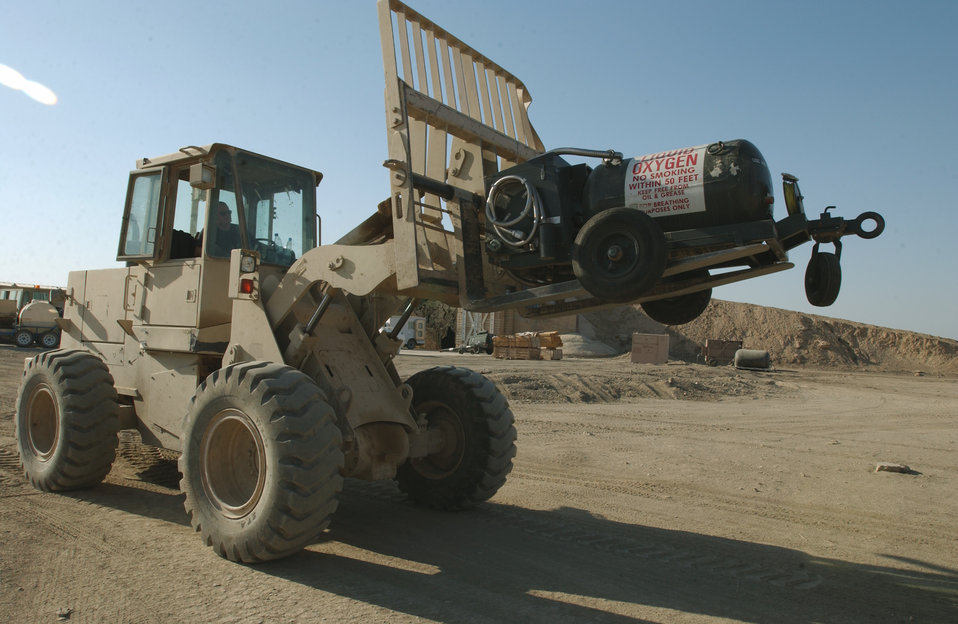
O2 Delivery

TALLIL AIR BASE, Iraq -- Senior Airman Timothy Vieira, 332d Expeditionary Logistics Readiness Squadron, employs a fork lift to unload an oxygen tank/trailer, at Tallil Air Base, Iraq, on Oct. 10, 2003, in support of Operation Iraqi Freedom. The Red Tail Express covered almost 30,000 miles of roadway on its 59 convoy trips north of Iraq, delivering provisions to Tallil and Kirkuk Air Base, and Baghdad International Airport.